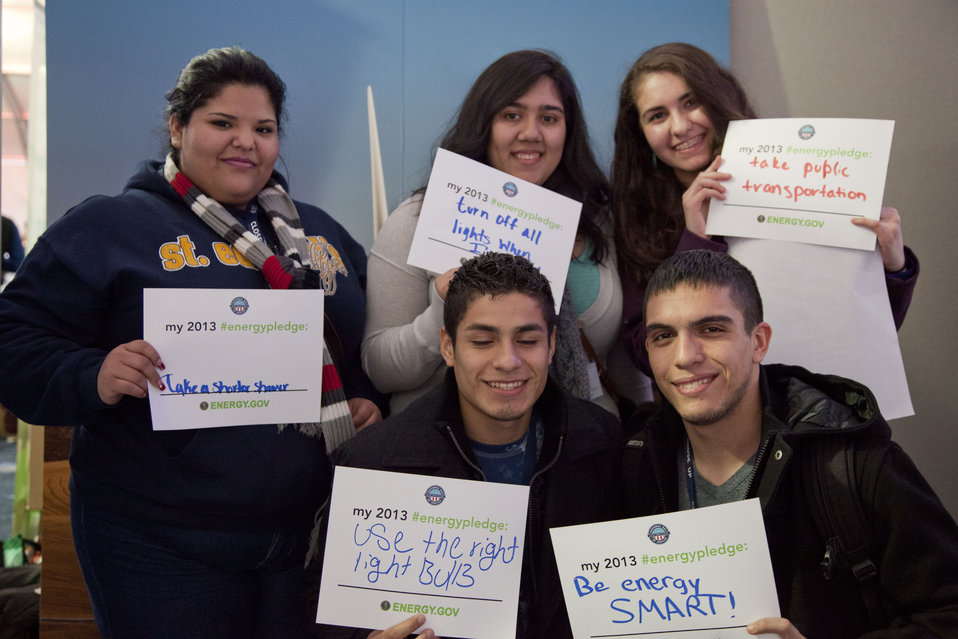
What's your #energypledge?